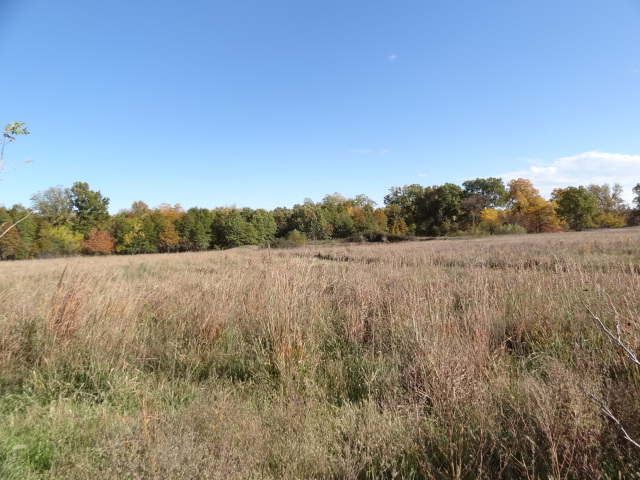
Late Summer Foliage Marais des Cygnes National Wildlife Refuge

Late Summer at Marais des Cygnes National Wildlife Refuge.